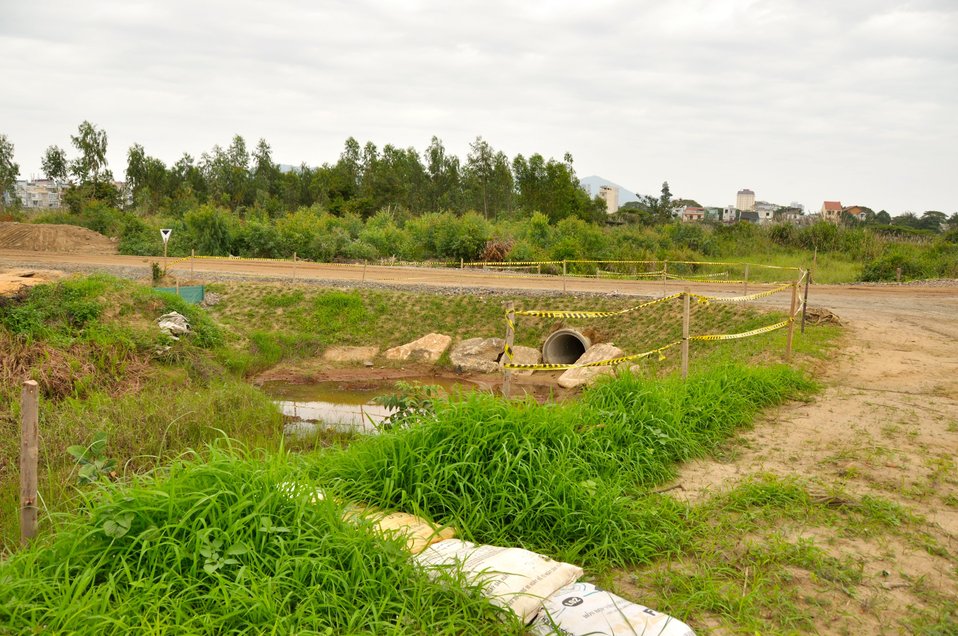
Site Preparation for Environmental Remediation of Dioxin Contamination at Danang Airport

Danang Airport, January 22, 2013